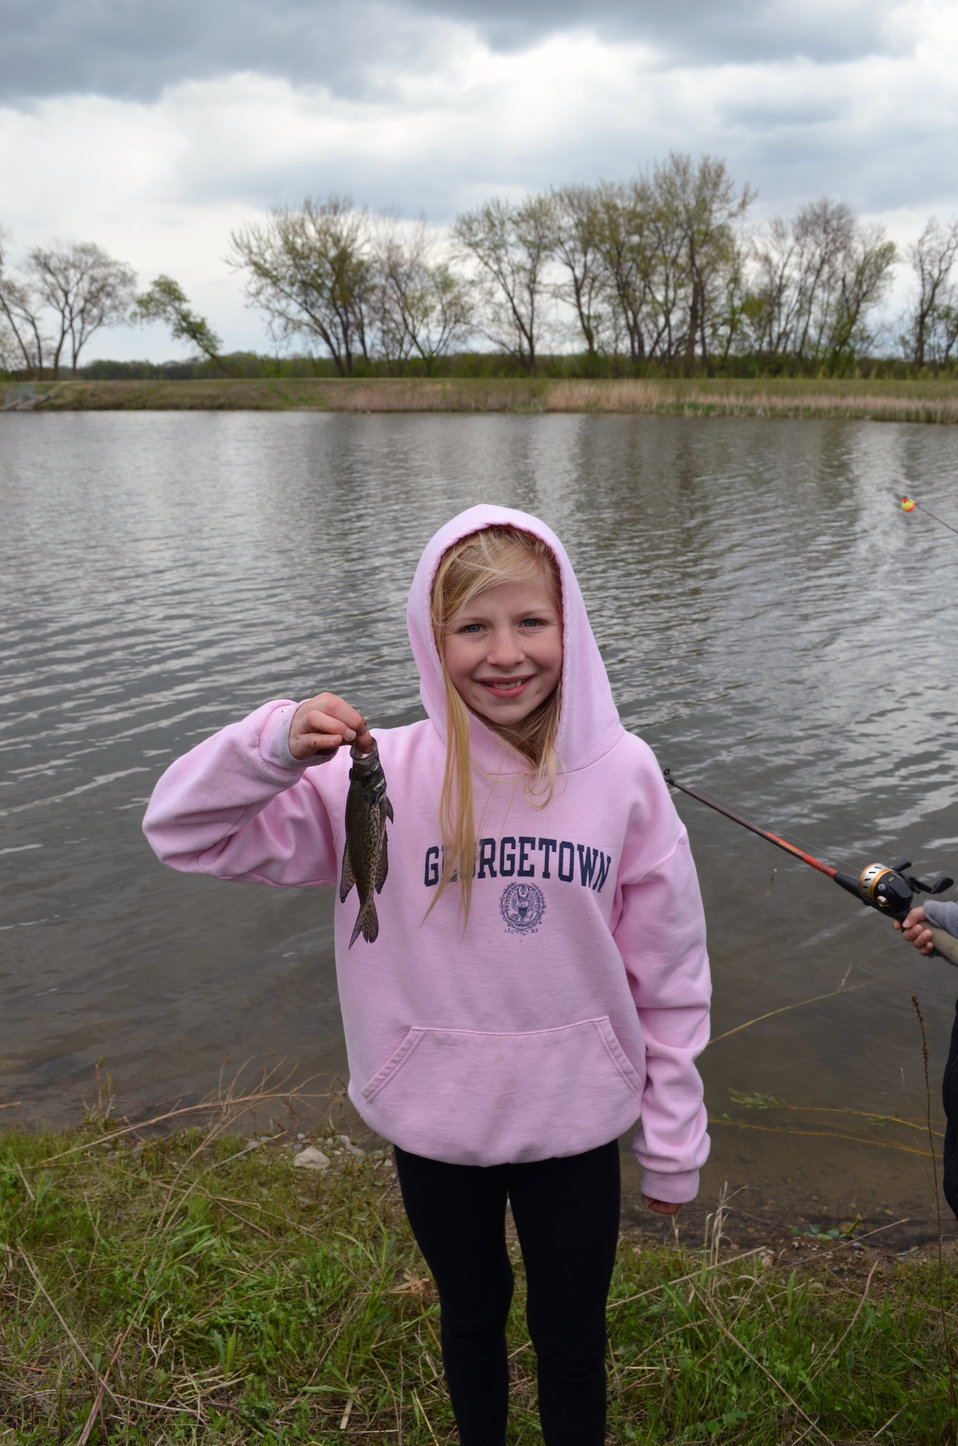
Proud moment of the day